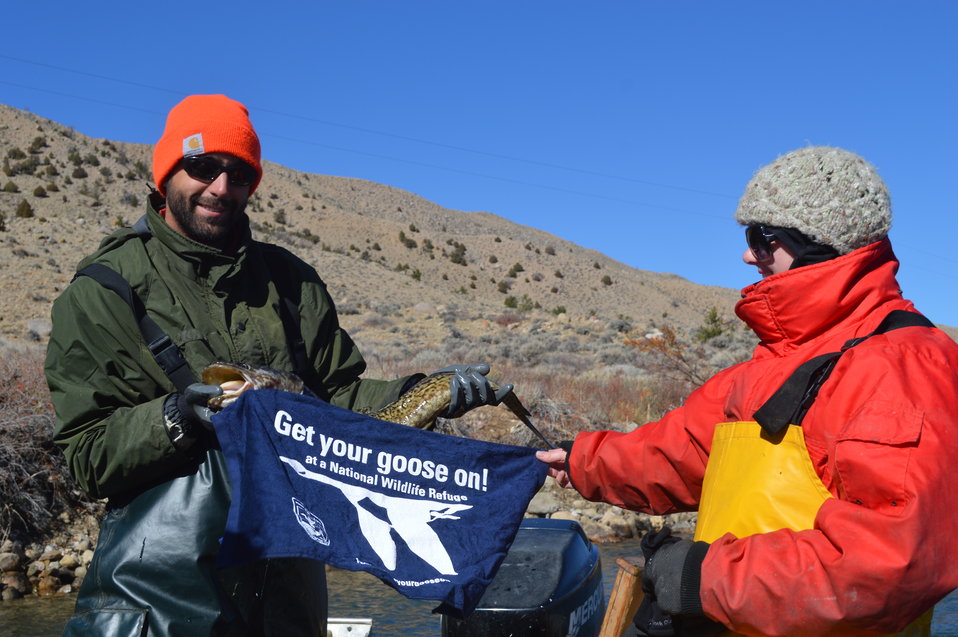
Get your Goose on for Burbot!